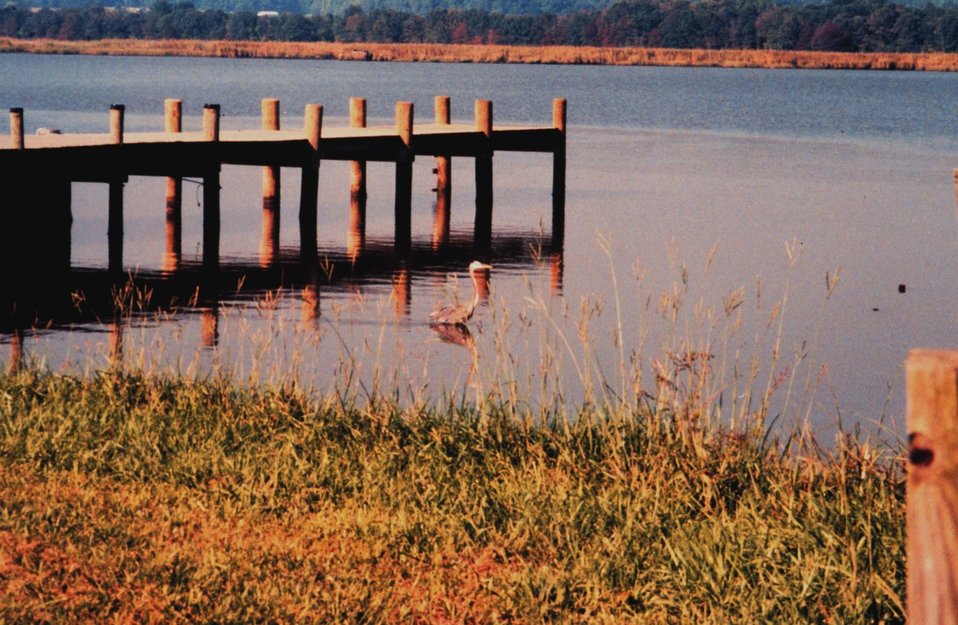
Great Blue Heron fishing along the Patuxent River.